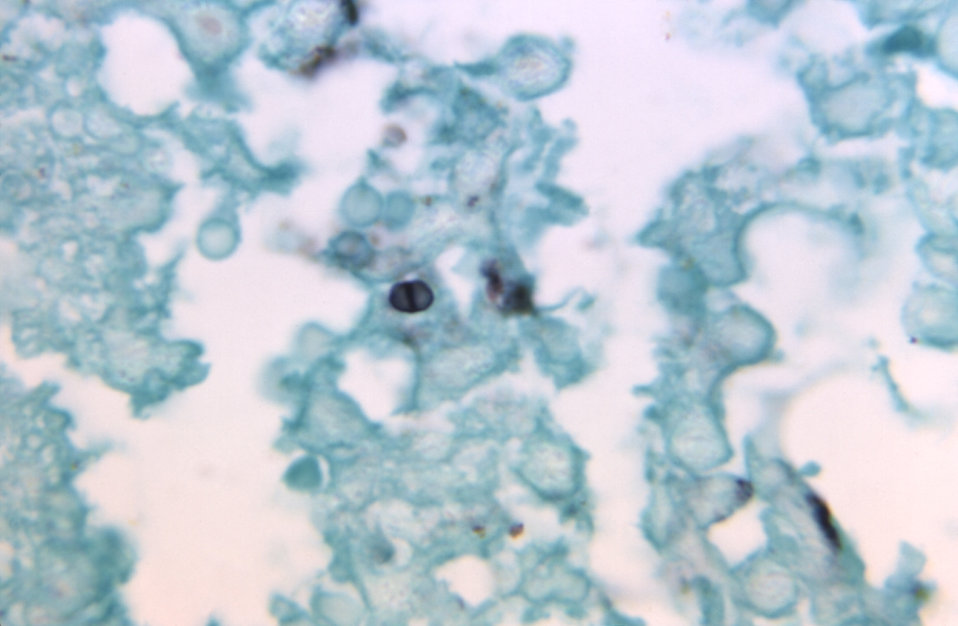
Magnified 1125X, this Gomori-stained photomicrograph revealed the presence of a Penicillium marneffei yeast cell, which was found in a specimen of human spleen.